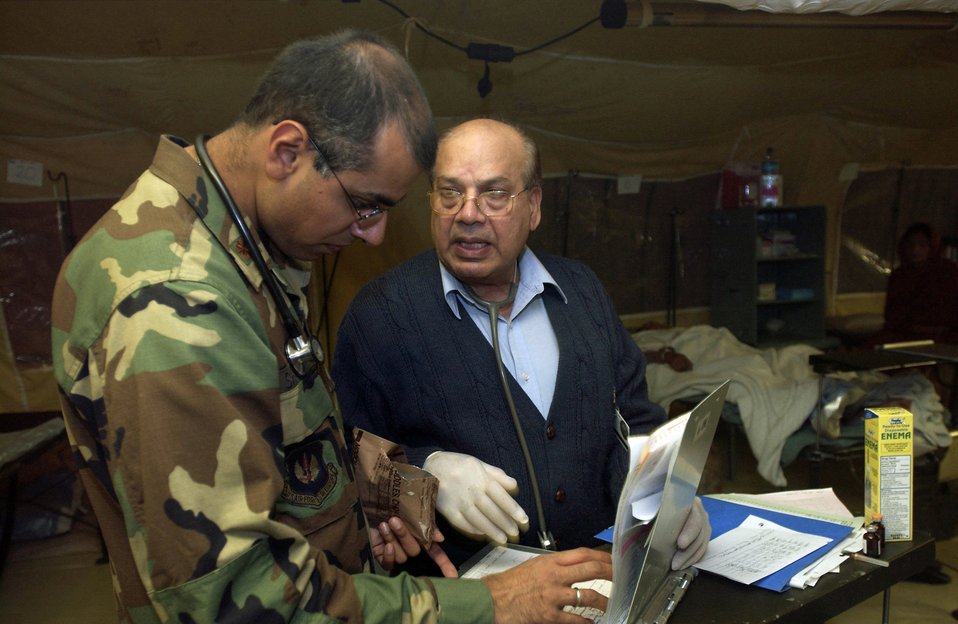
Pakistan Relief

MUZAFFARABAD, Pakistan (AFPN) -- Maj. (Dr.) Fareed Sheikh (left) and his father Dr. Mushtaq Sheikh, a civilian physician, treat a patient at the 212th Mobile Army Surgical Hospital unit here. Both doctors are Pakistani-Americans. The hospital is helping with earthquake relief operations.